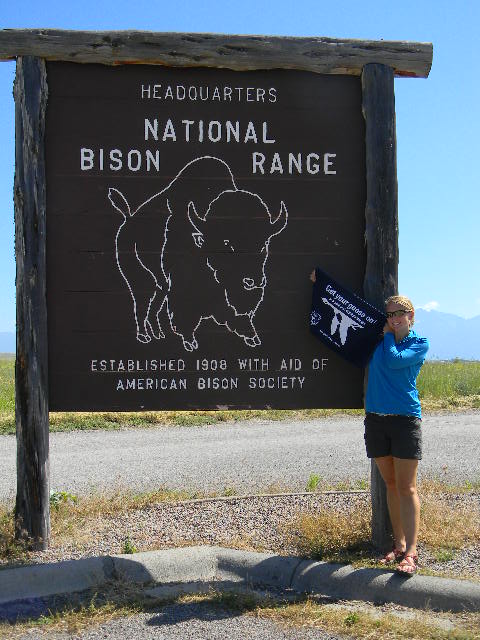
Get Your Goose On! - National Bison Range Style